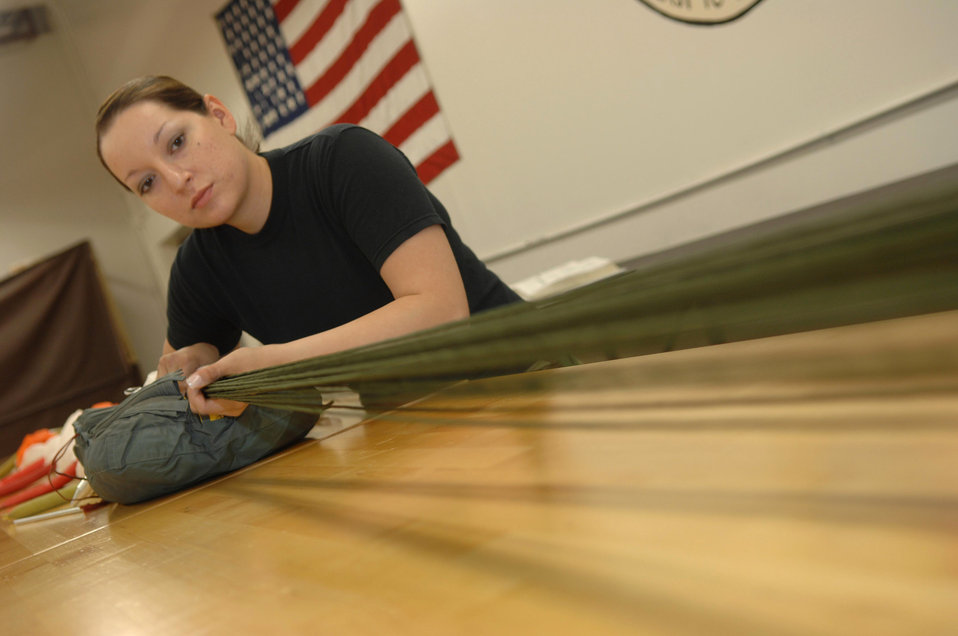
Aircrews depend on these Airmen

Senior Airman Brenda Schaub packs a parachute June 25 at Davis-Monthan Air Force Base, Ariz. Airman Schaub is an aircrew flight equipment journeyman assigned to the 355th Operation Support Squadron where she also maintains, repairs, and fabricates other types of survival equipment.